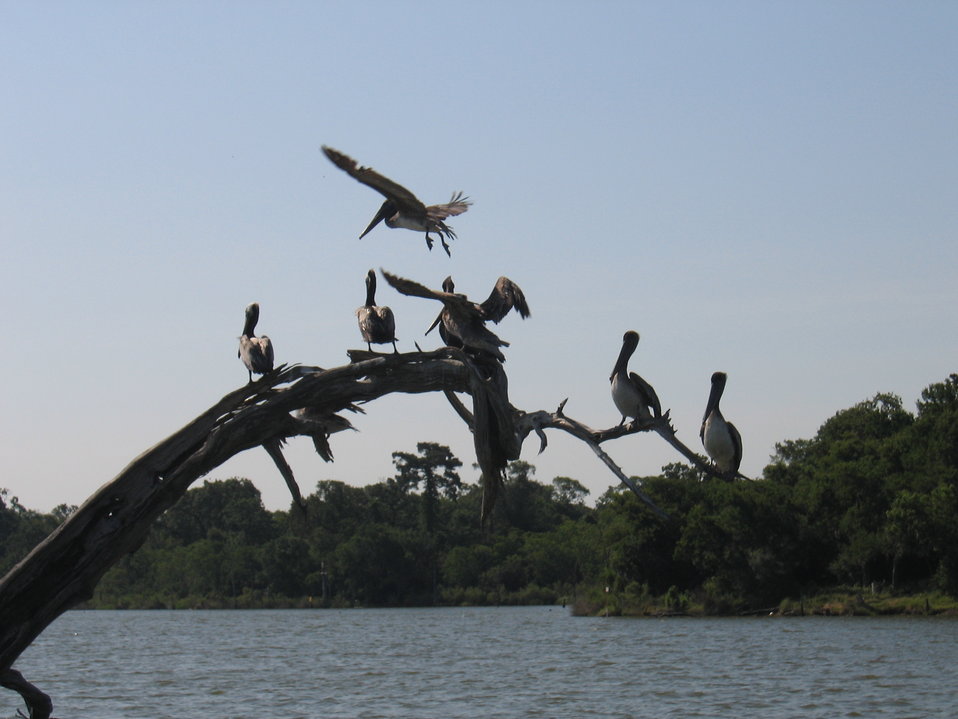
Pelicans at Armand Bayou, Texas